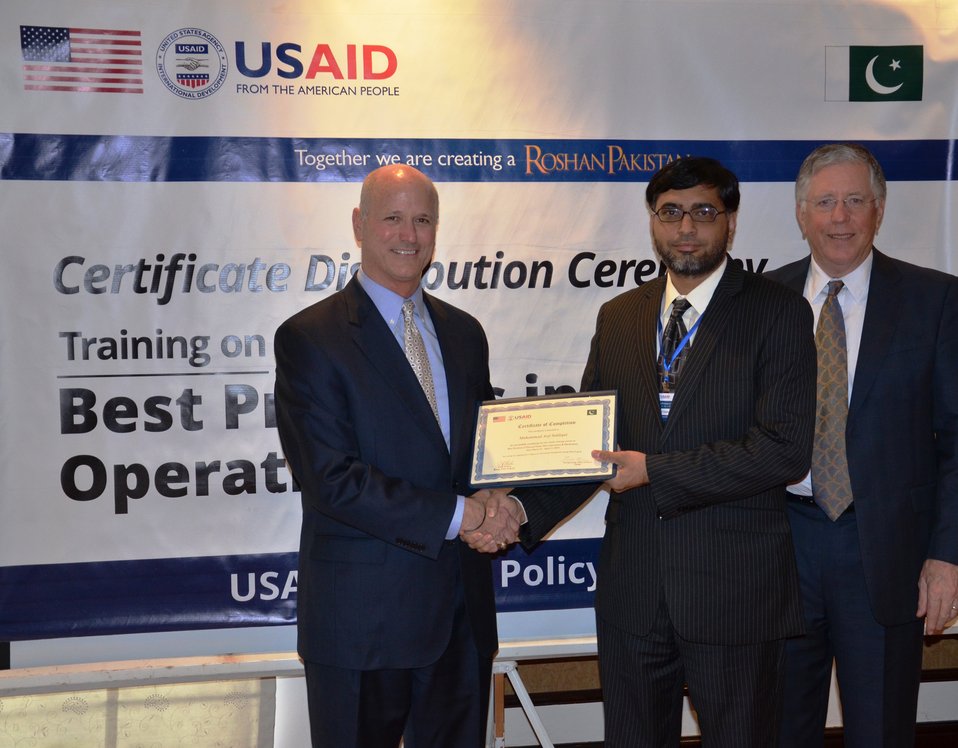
Tim Moore, Acting Director USAID Energy Office giving certificate to Mr. Muhammad Asif Siddiqui of Guddu Thermal Power Station.